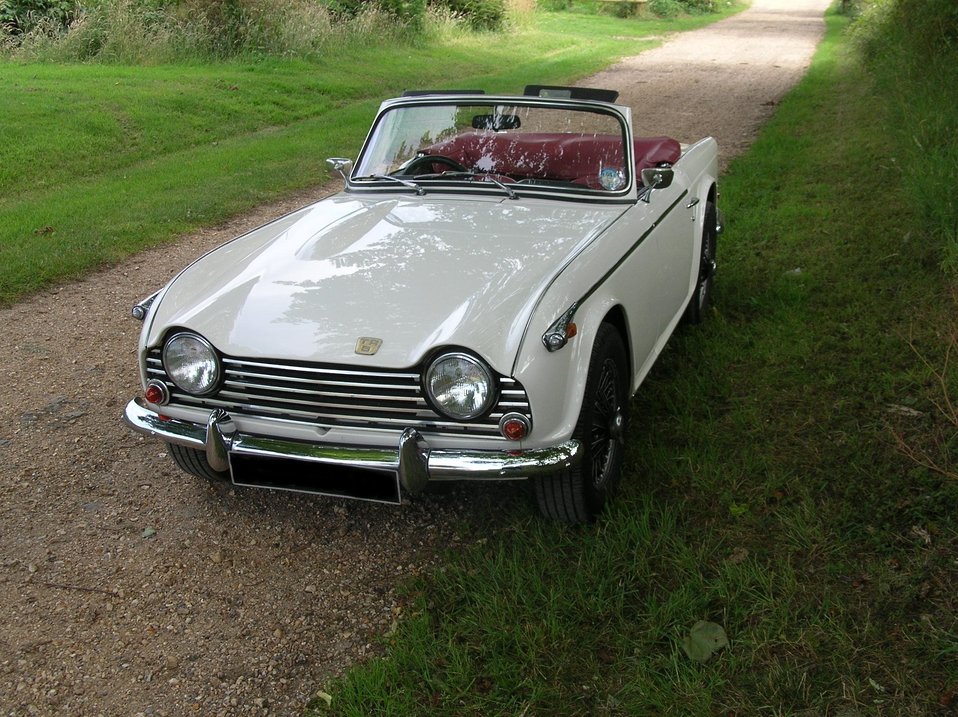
The front of a 1969 Triumph TR5.